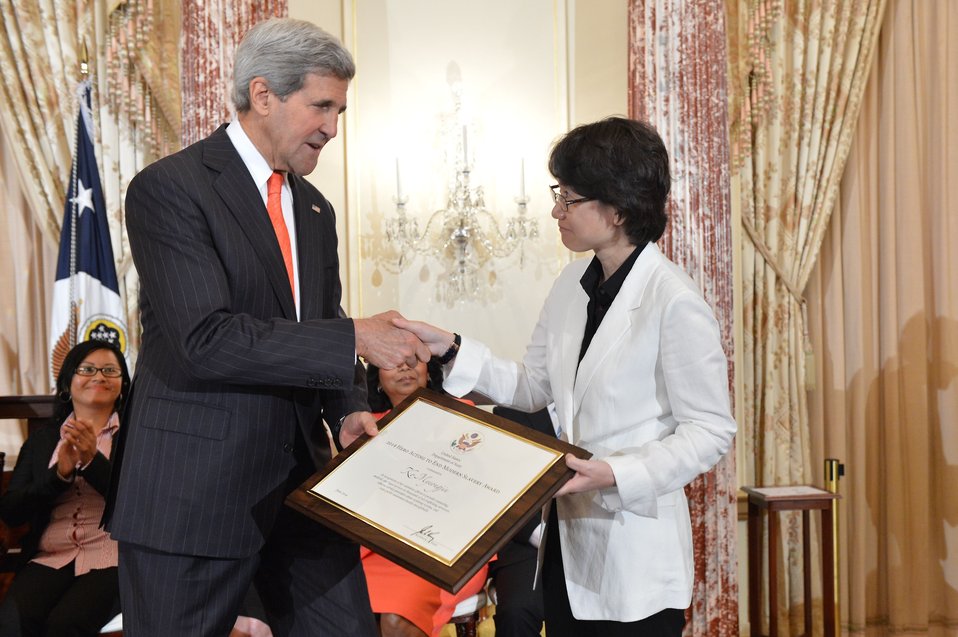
Secretary Kerry With TIP Hero Myeong-jin Ko of South Korea

U.S. Secretary of State John Kerry recognizes Myeong-jin Ko of South Korea as a 2014 Trafficking in Persons Report Hero at the U.S. Department of State in Washington, D.C., on June 20, 2014. Myeong-jin Ko is a tireless activist who directs the Dasihamkke Center for sex trafficking victims in South Korea.